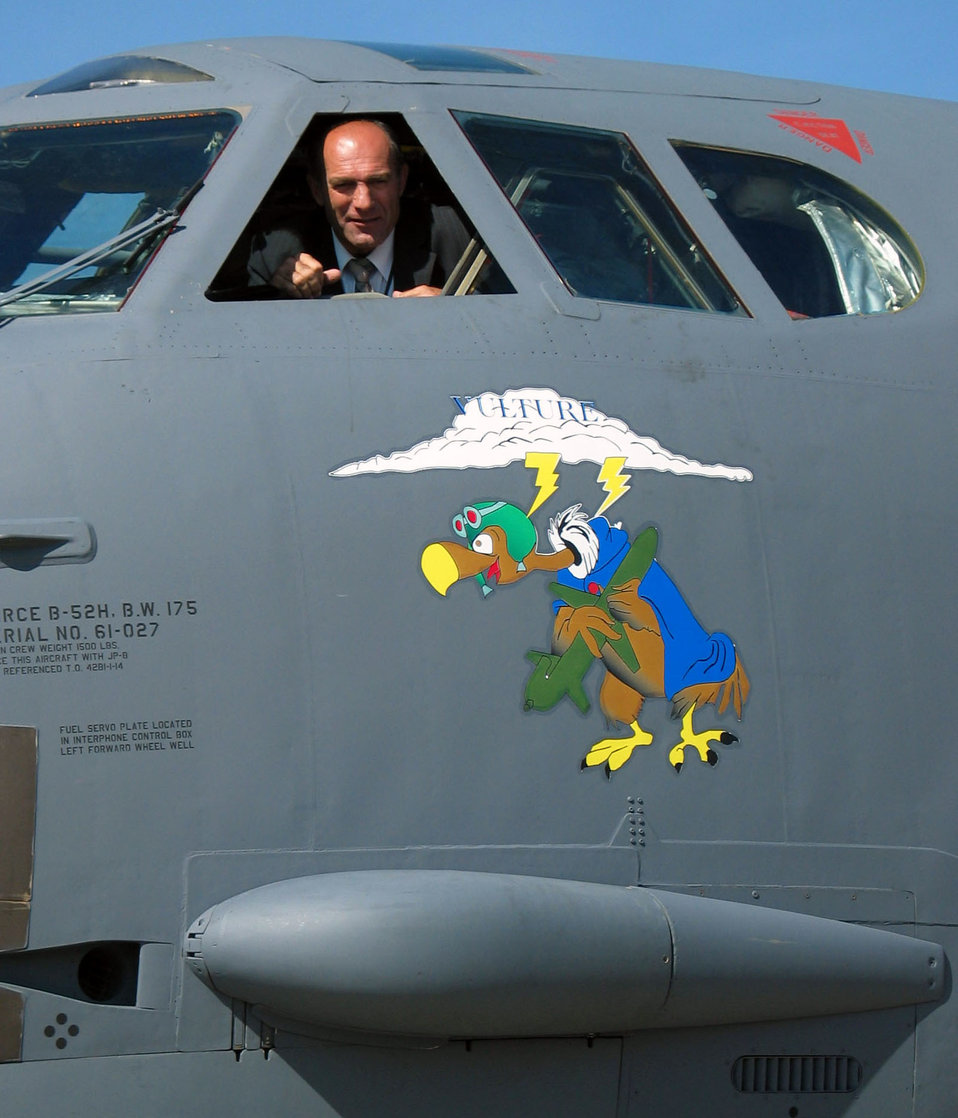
Tolboev

ZHUKOVSKY, Russia -- Russian air force Col. Magomed Tolboev looks out from the cockpit of the U.S. B-52 Stratofortress bomber that landed here Aug. 20 for the 6th Moscow Space and Aviation Show. In Russia, Tolboev is revered much like test pilot Chuck Yeager is in the United States. He is a former Soviet Union pilot and cosmonaut who tested military aircraft at this once secret air base. The B-52 is assigned to the 5th Bomb Wing at Minot Air Force Base, N.D.